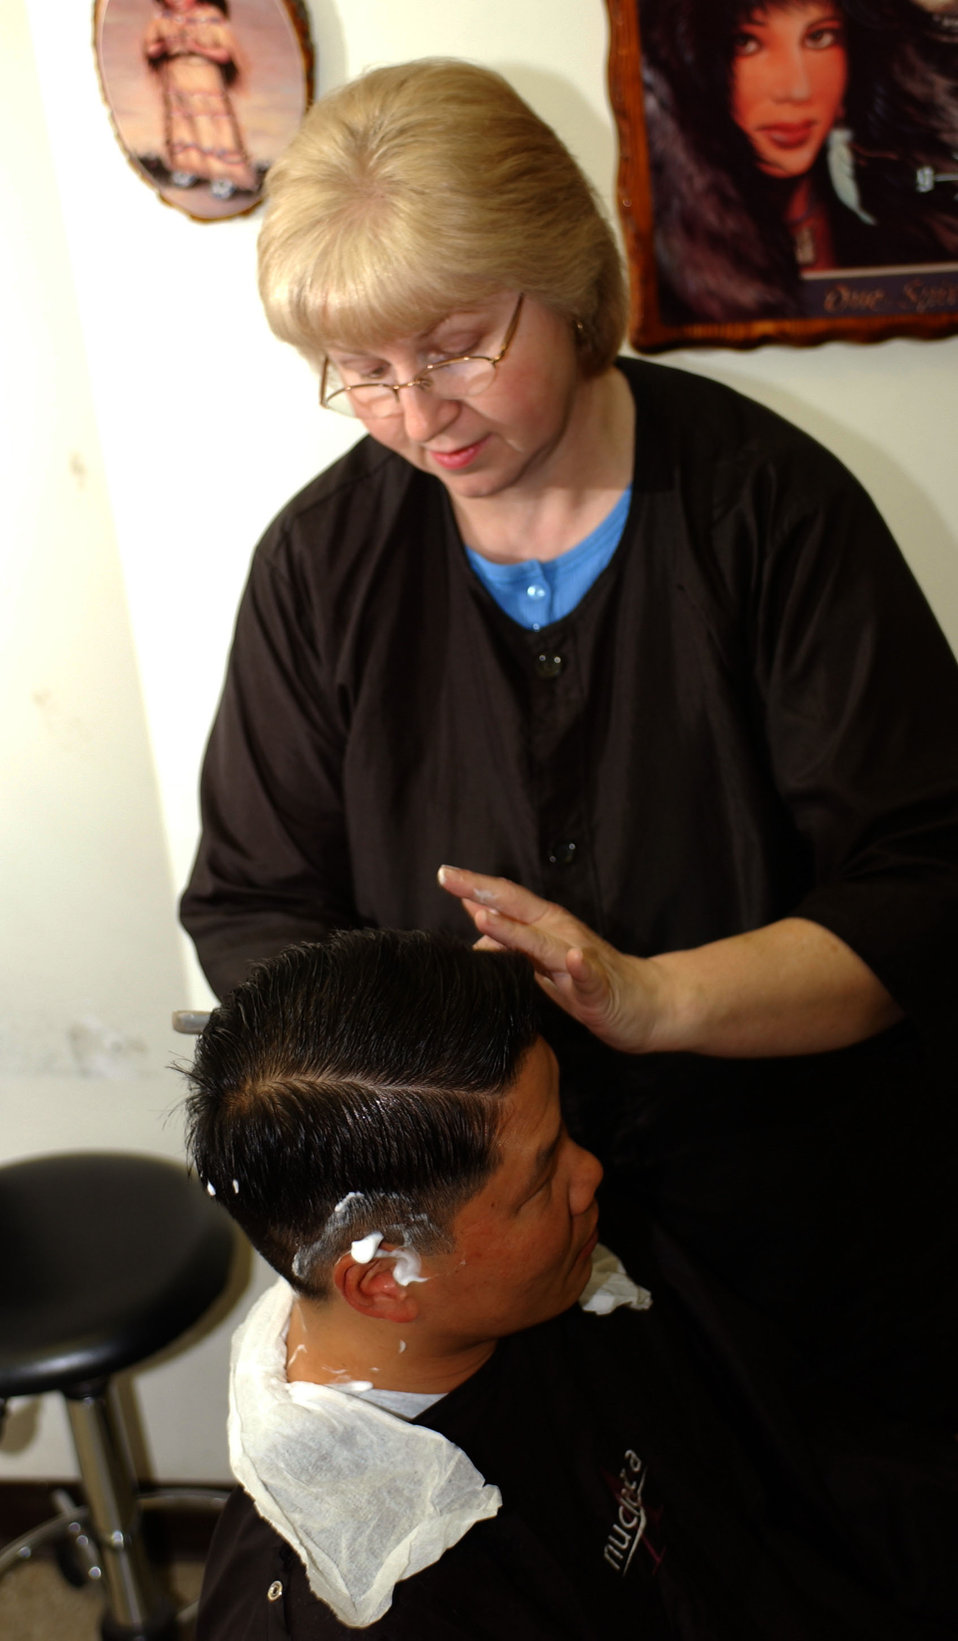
Fairchild barber relives history through customers

FAIRCHILD AIR FORCE BASE, Wash. -- Wanda Hummer, a barber here, gives a close shave to a regular customer. Mrs. Hummer began cutting hair on the base in 1972 and, with the exception of a short hiatus in the late 1970s, has worked here consistently since. In the past 33 years, she has grown close to many of her customers.